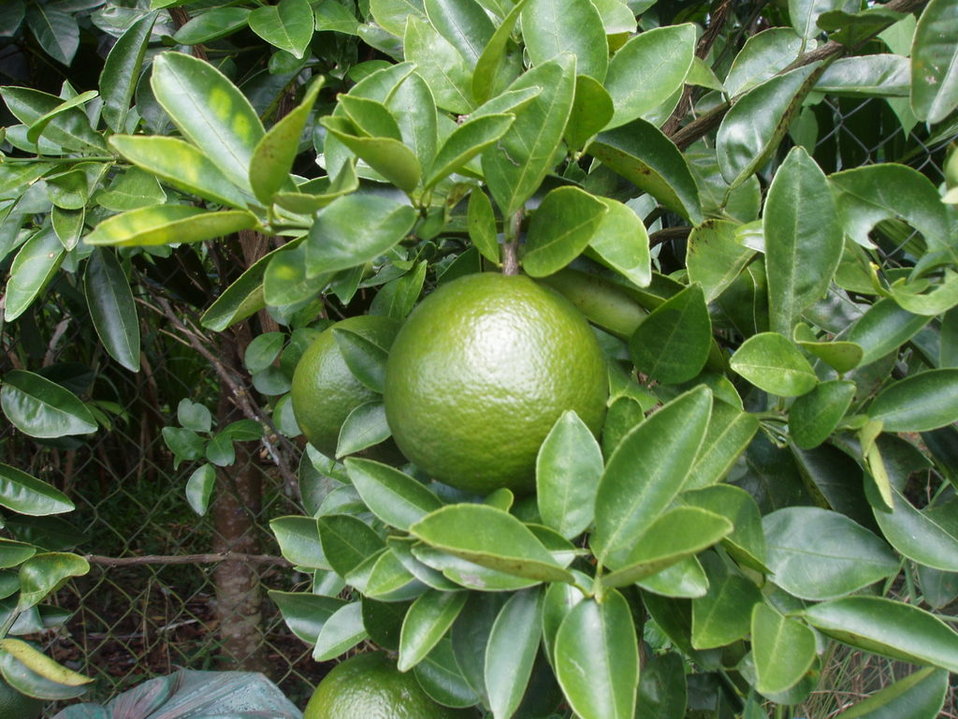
Cam sành